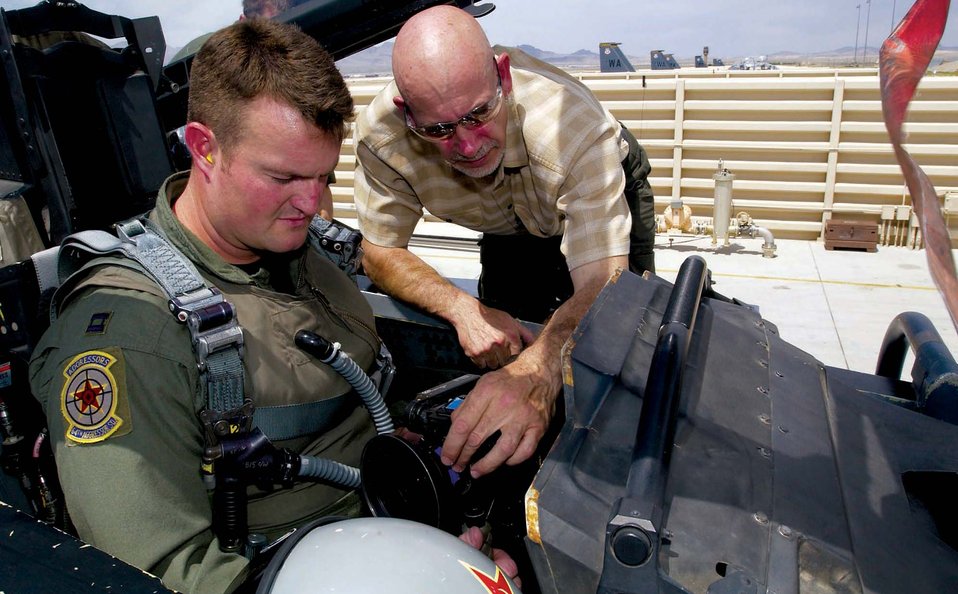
IMAX at Nellis

NELLIS AIR FORCE BASE, Nev. -- Bill Reeve, IMAX director of photography, shows Capt. Randy Cason how to operate an in-cockpit camera. Filming of an IMAX movie, a documentary about Red Flag exercises, continued here June 14 to 18. Captain Carson is an F-16 Fighting Falcon pilot with the 64th Aggressor Squadron.